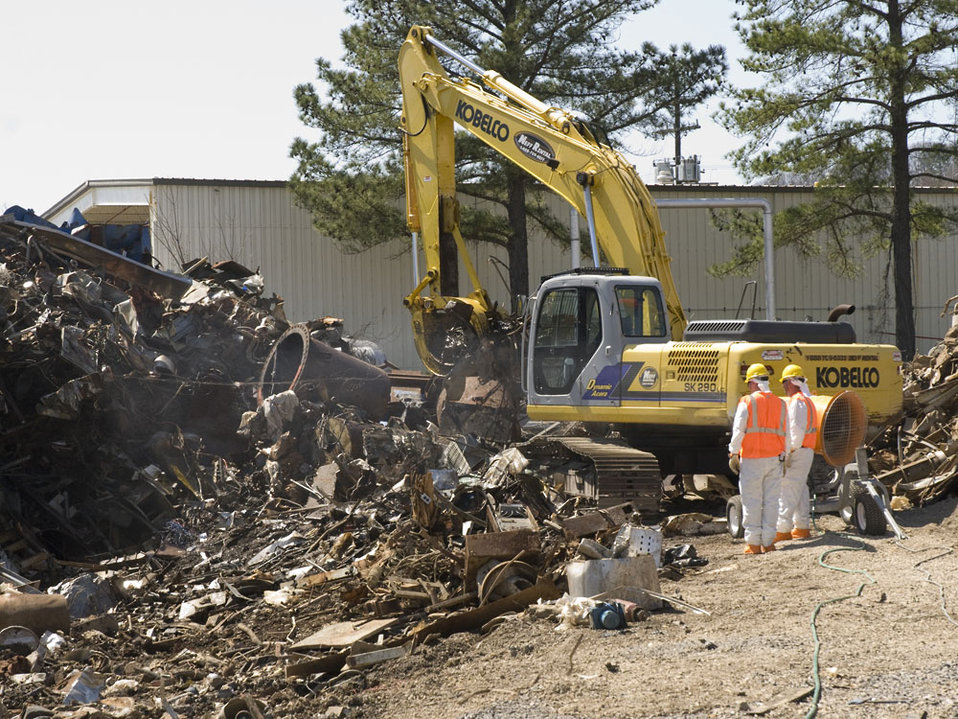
Skilled Workers Bruised by Recession Find New Start in Oak Ridge Recovery Act Work

Efforts to clean up waste from the Manhattan Project and the Cold War are under way at the Y-12 National Security Complex. The seven projects there funded by $216 million from the Recovery Act are providing work for more than 1,500 Americans, many of whom had struggled in the recent recession.

In addition to the work at Alpha 5 and Beta 4, Recovery Act projects at Y-12 include the West End Mercury Area storm sewer cleanup project, removal of soil contaminated with mercury, and the cleanup of a 7-acre scrap yard. In January 2011, Recovery Act workers completed the demolition of Building 9211 at Y-12, which reduced the footprint of the Cold War legacy by more than 83,000 square feet.